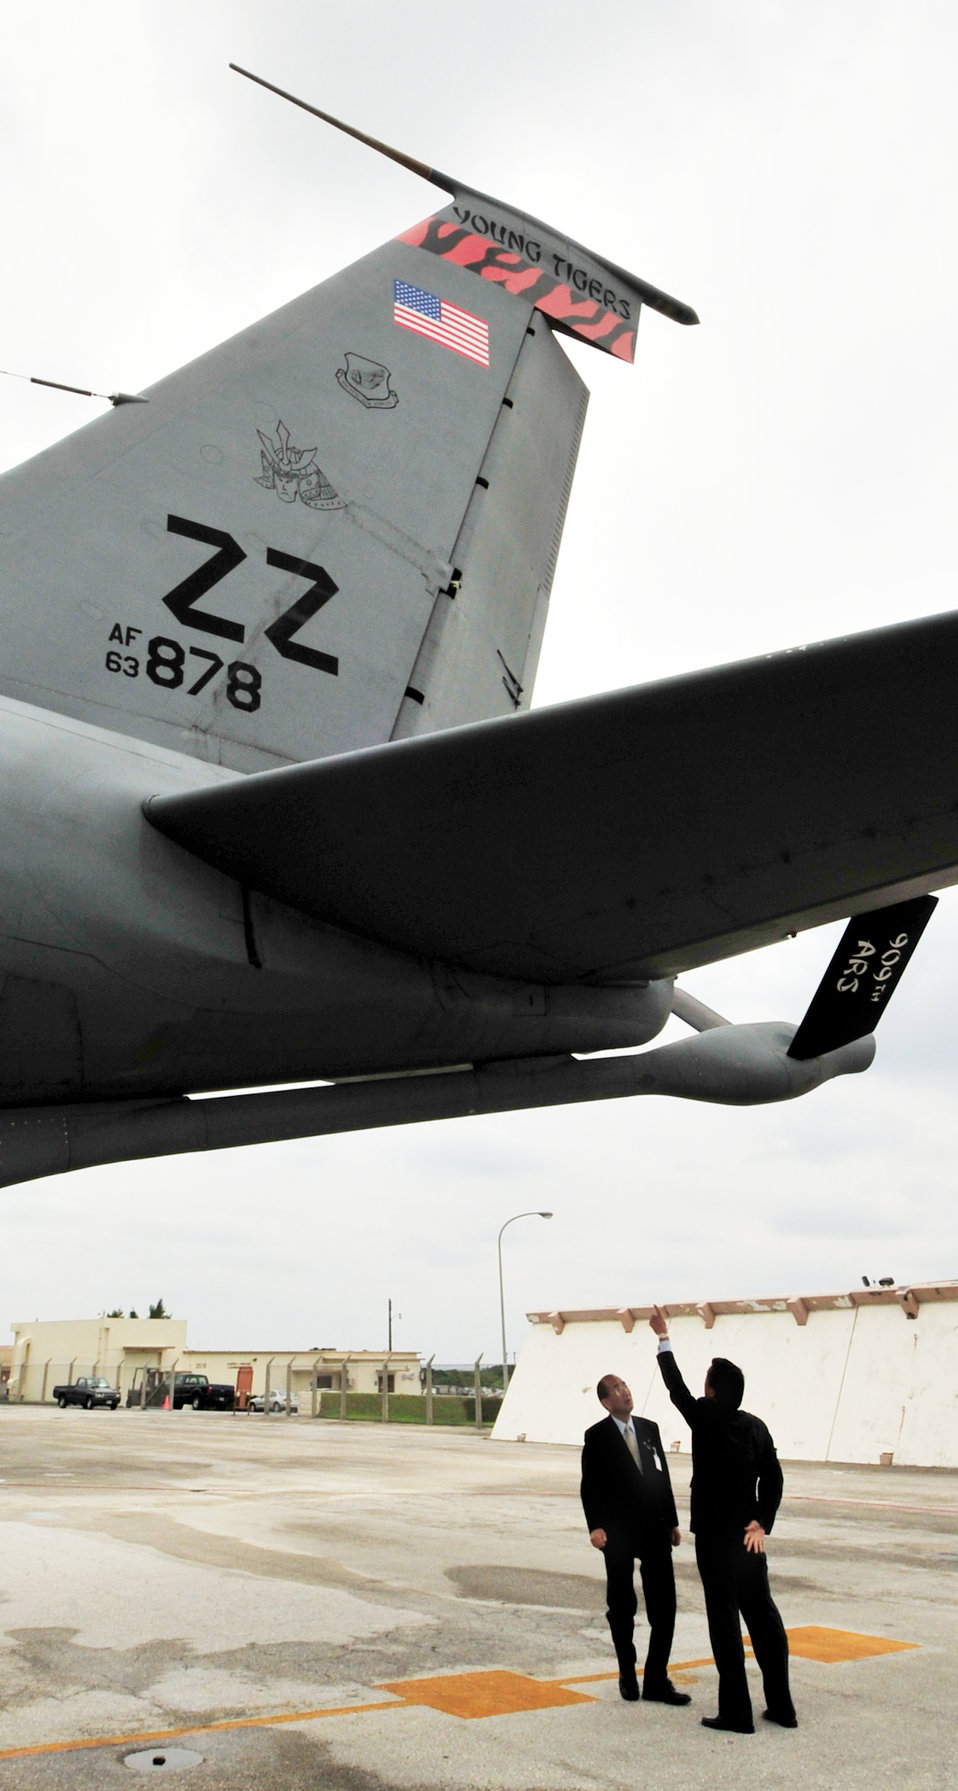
Japanese civic leaders get a taste of Kadena mission

Japanese civic leaders tour the flightline and view static displays of an F-15E Strike Eagle, HH-60G Pave Hawk and a KC-135 Stratotanker Feb. 19, 2010, at Kadena Air Base, Japan.